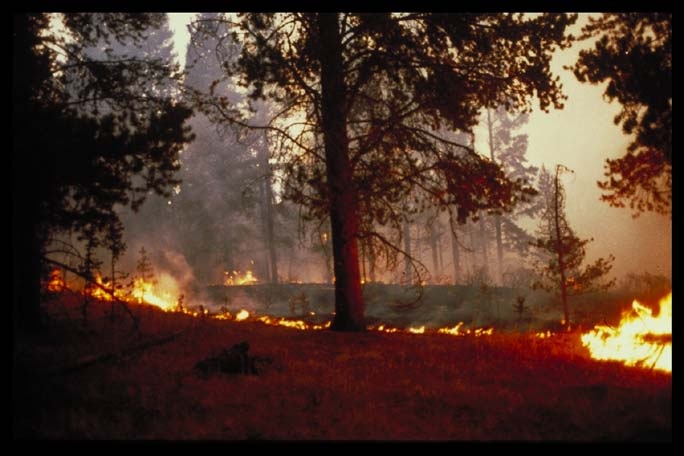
Wildland fire